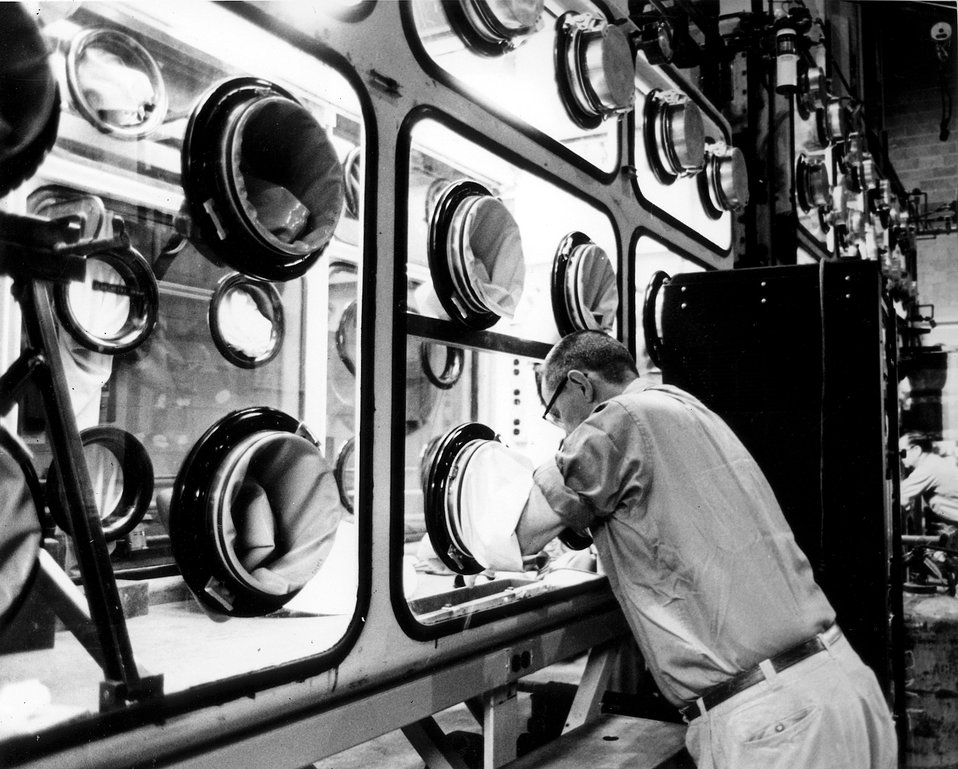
Hoods like these are used in the Chemical Engineering Division of Argonne Lab to 'rock-up' a remote-controlled liquid metal fuel decladding process.
c.1970